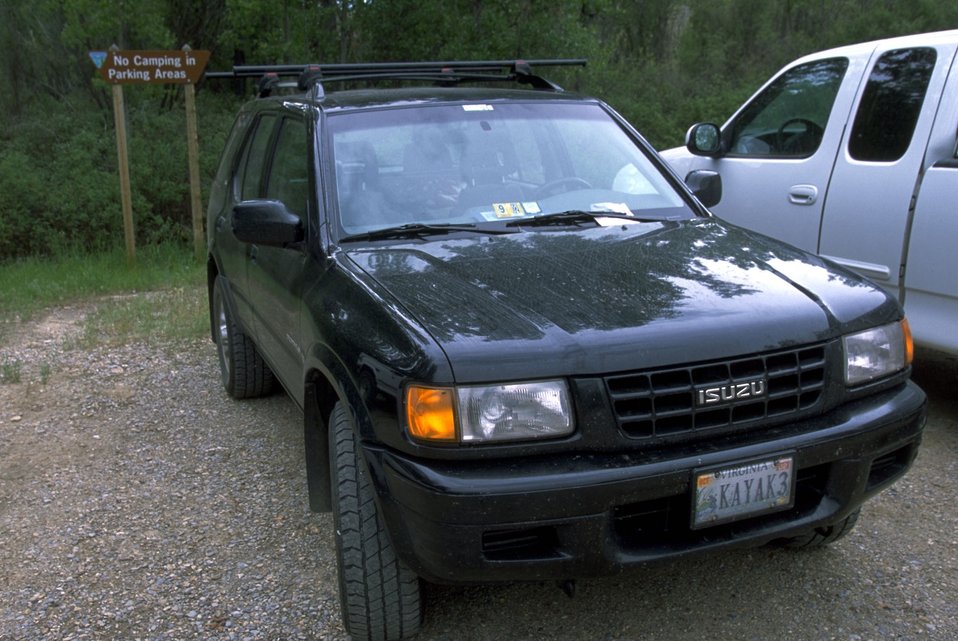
A vehicle from Virginia in the parking lot of Kipp Recreation Site